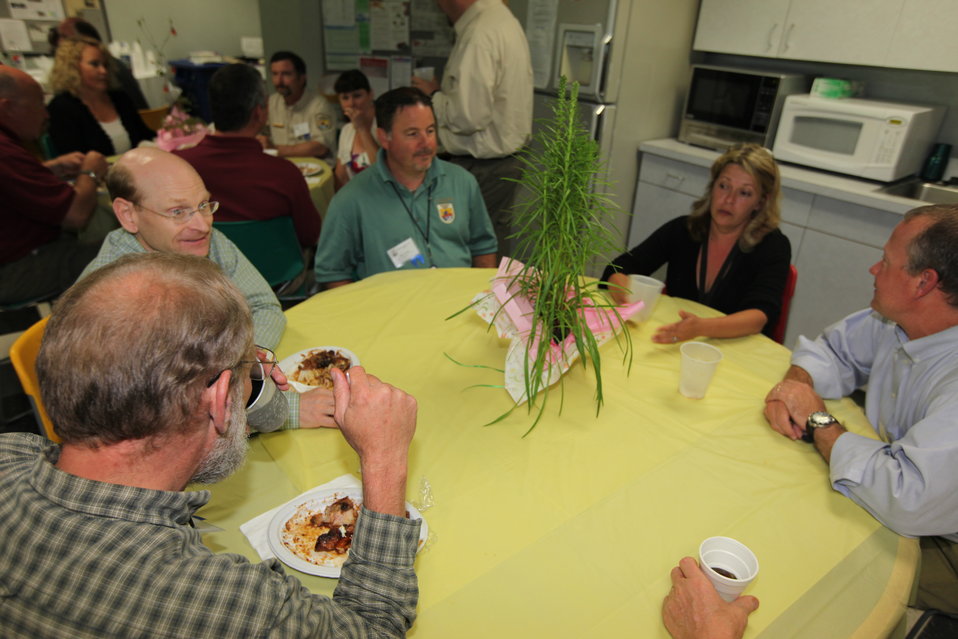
Northeast Region Employee Appreciation Awards

Luncheon